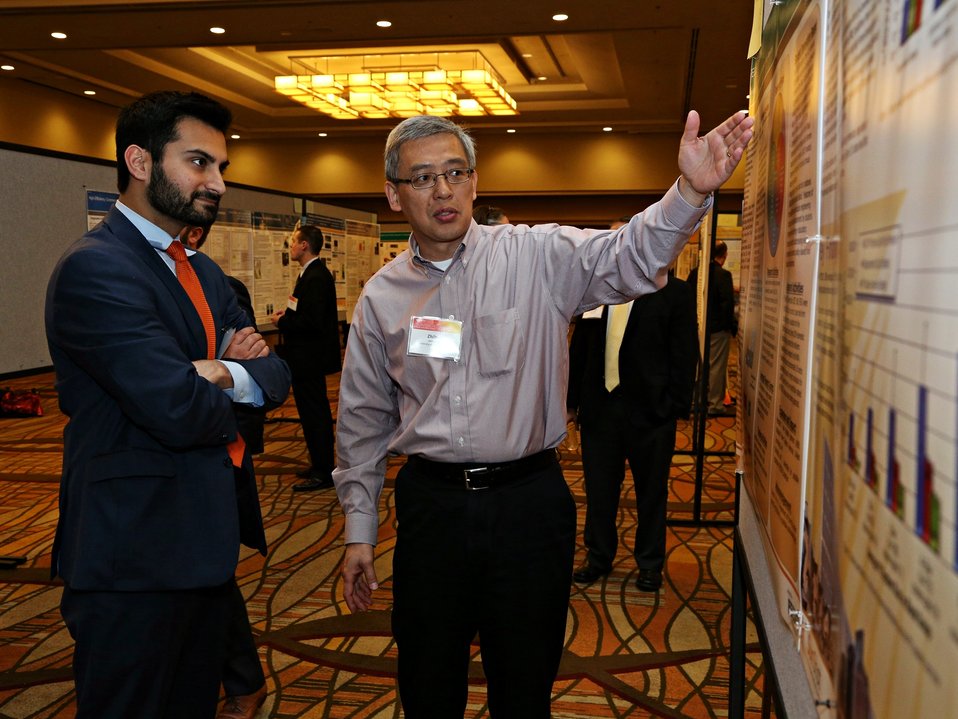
VIP Walkthough 5

Ali Zaidi, Deputy Director for Energy Policy, The White House Domestic Policy Council reviewing the posters in the tech forum.